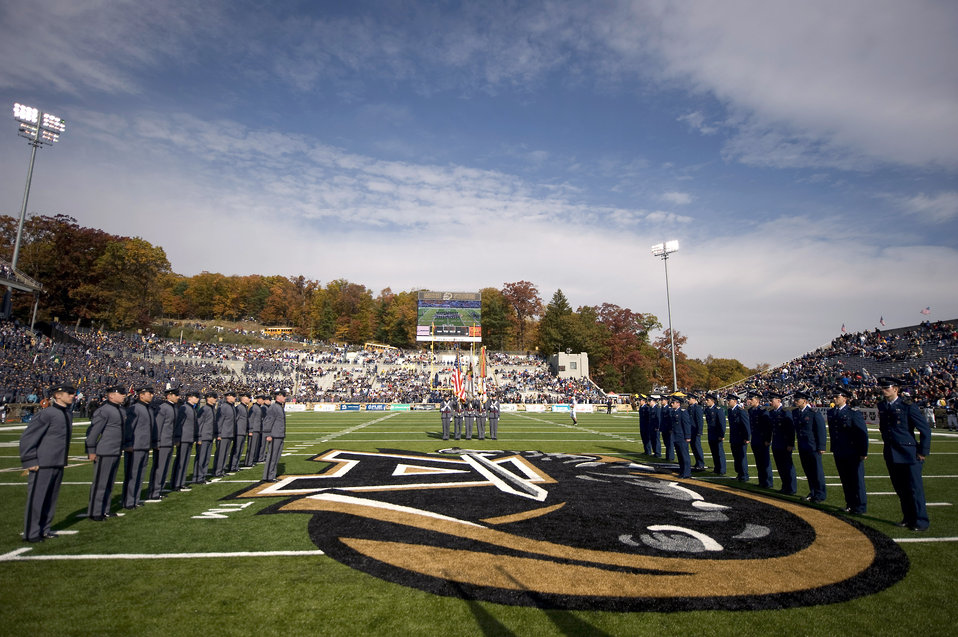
Football: Falcons top Army in slugfest

Cadets of the U.S. Military Academy and U.S. Air Force Academy face off prior to kickoff in their annual battle in which Air Force defeated Army 16-7 Nov. 1 at West Point, N.Y.